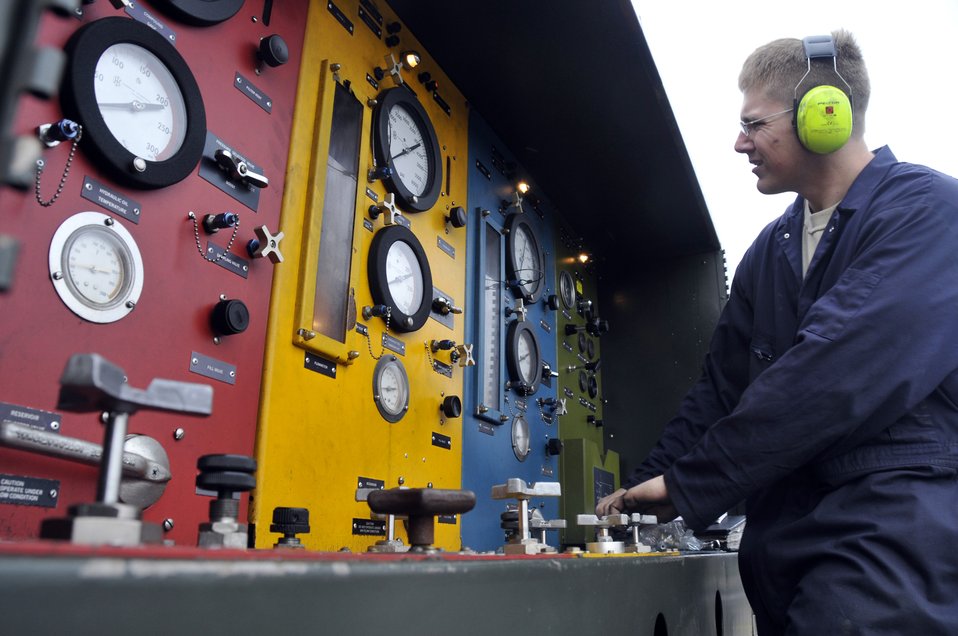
Gauging the problem

Senior Airmen Don Pollard performs electrical troubleshooting on a hydraulic test stand in the aerospace ground equipment shop Nov. 24, 2009, at Royal Air Force Lakenheath, England. Troubleshooting is used frequently in AGE and is the reason for daily quick fixes. Airman Pollard is an AGE journeyman with the 48th Equipment Maintenance Squadron.